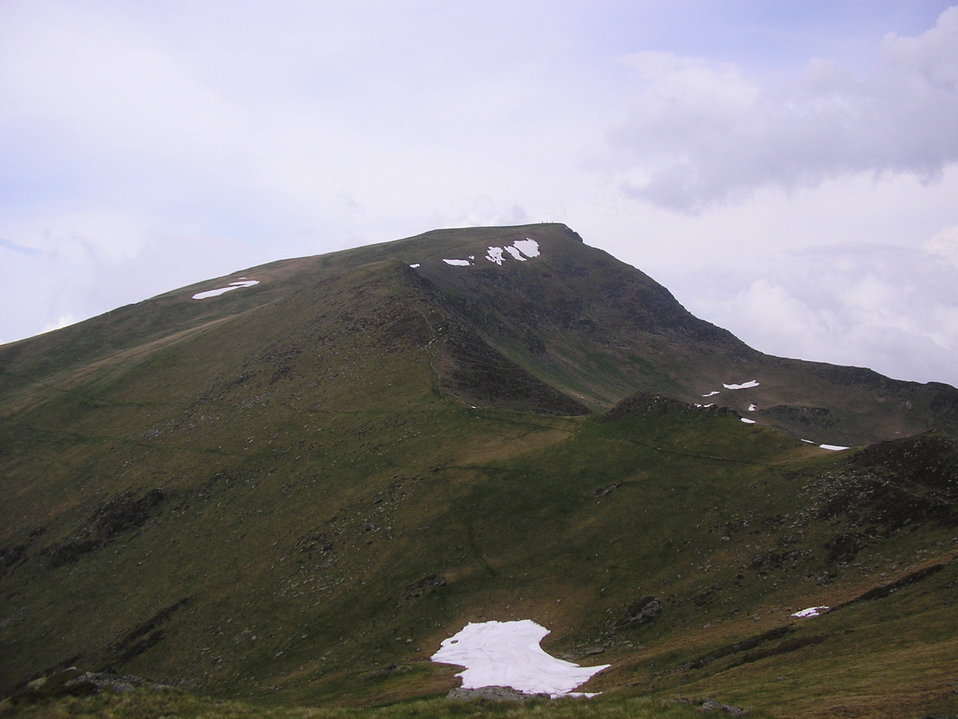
Русский: Гора Кабалирос